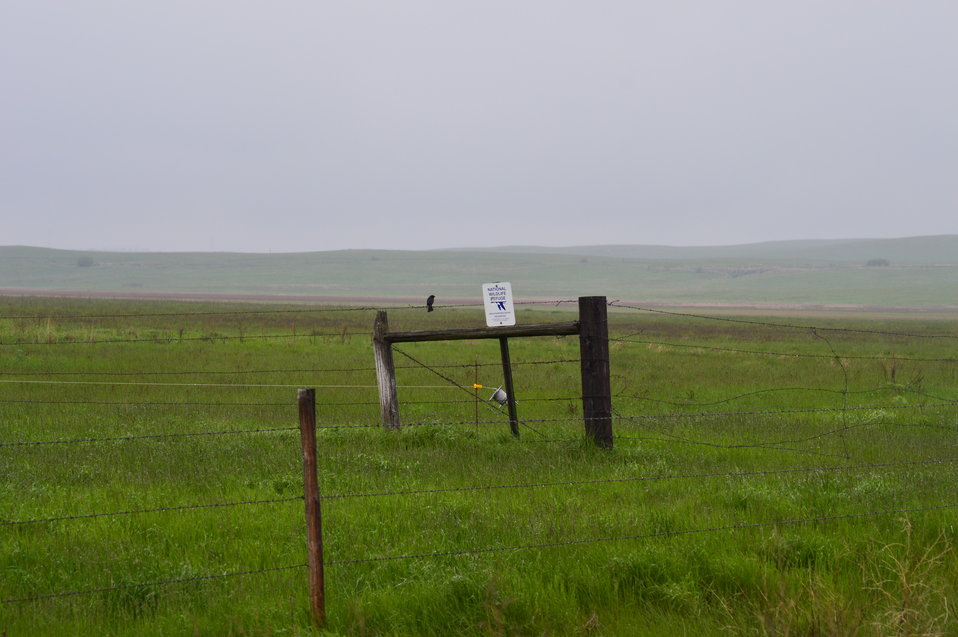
NWR sign

Scenery and wildlife at Lost Lake National Wildlife Refuge in North Dakota.